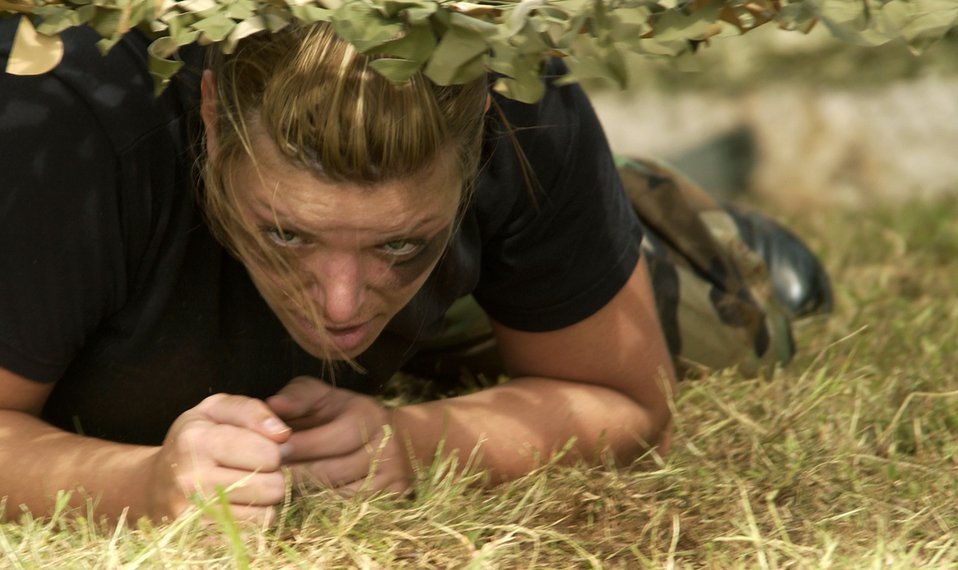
Warrior Day

ANDERSEN AIR FORCE BASE, Guam -- Staff Sgt. Marlena Covertson low crawls through an obstacle course recently during Andersen's annual Warrior Day Challenge. The event challenges teams from different squadrons in six events testing physical fitness, self-aid buddy care, gas mask donning, weapons assembly, an obstacle course and knowledge of the Airman's Manual. Sergeant Jones is assigned to the 13th Air Force.